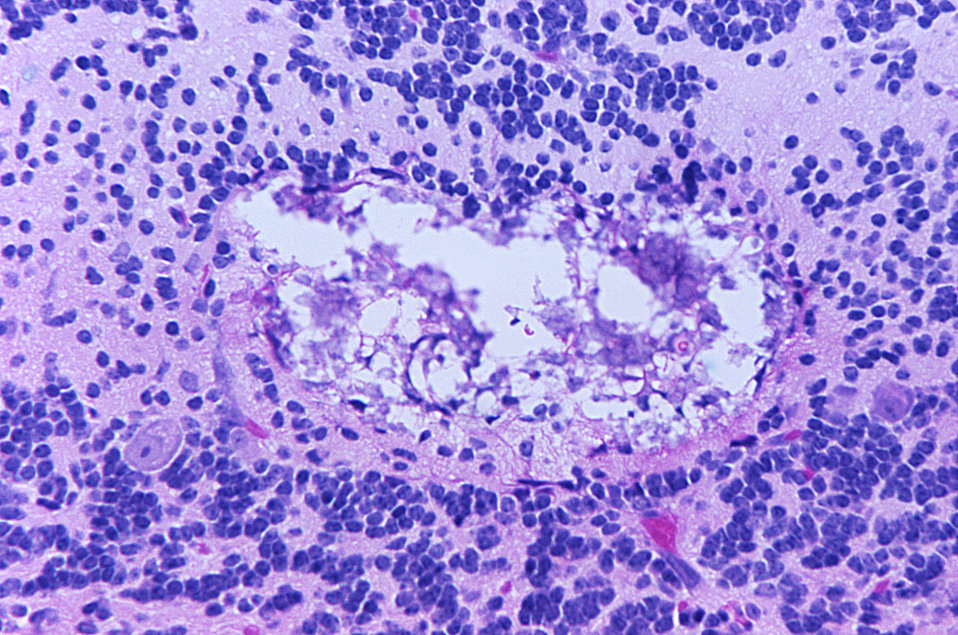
This micrograph reveals the histopathologic changes found in Tamiami virus encephalitis; Mag. 300X.